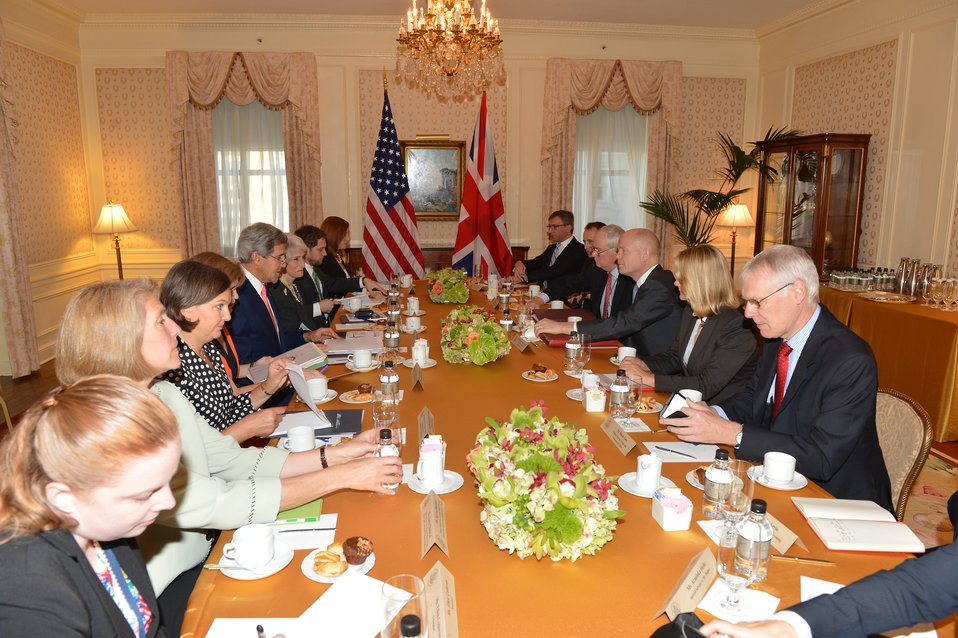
Secretary Kerry Meets With UK Foreign Secretary Hague

U.S. Secretary of State John Kerry holds a bilateral meeting with UK Foreign Secretary William Hague in New York City on September 23, 2013.